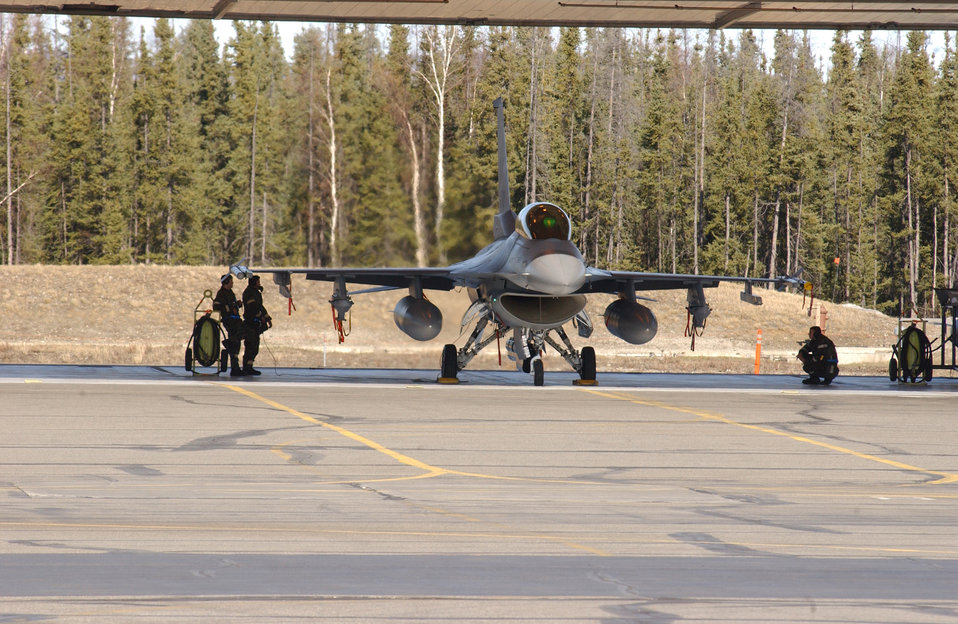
Falcon ready

EIELSON AIR FORCE BASE, Alaska -- An F-16 Fighting Falcon from the 18th Fighter Squadron here is prepared for take off April 9 as part of the wing's operational readiness exercise April 12.